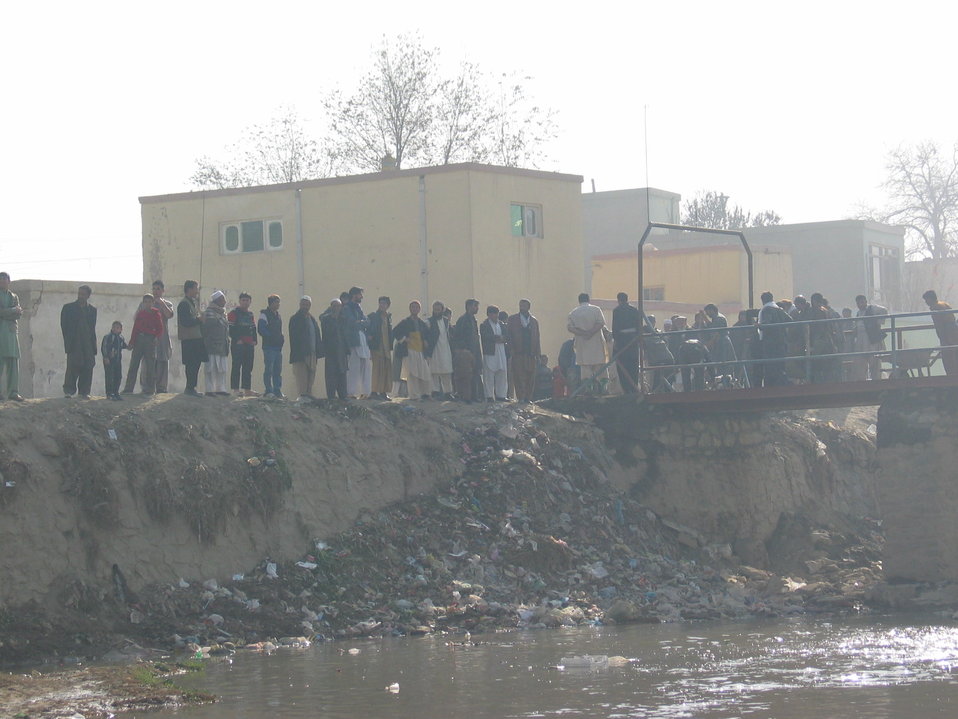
Kabul River Bridge Renovation, December 3, 2010